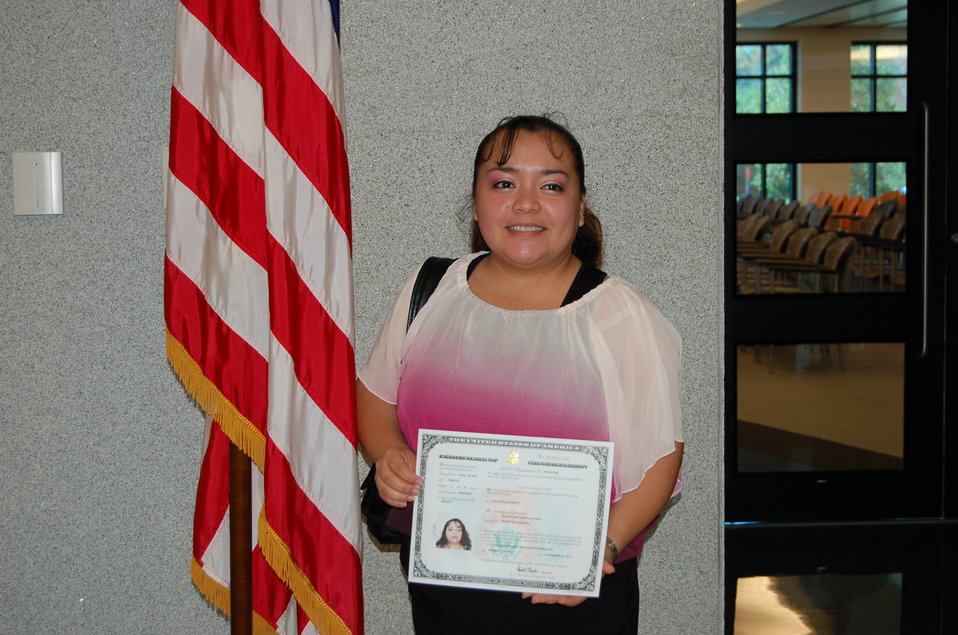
New Citizens